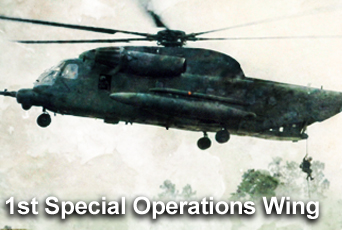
1st Special Operations Wing

The 1st Special Operations Wing at Hurlburt Field, Fla., is the focus of the January Heritage to Horizons Web page at www.af.mil.